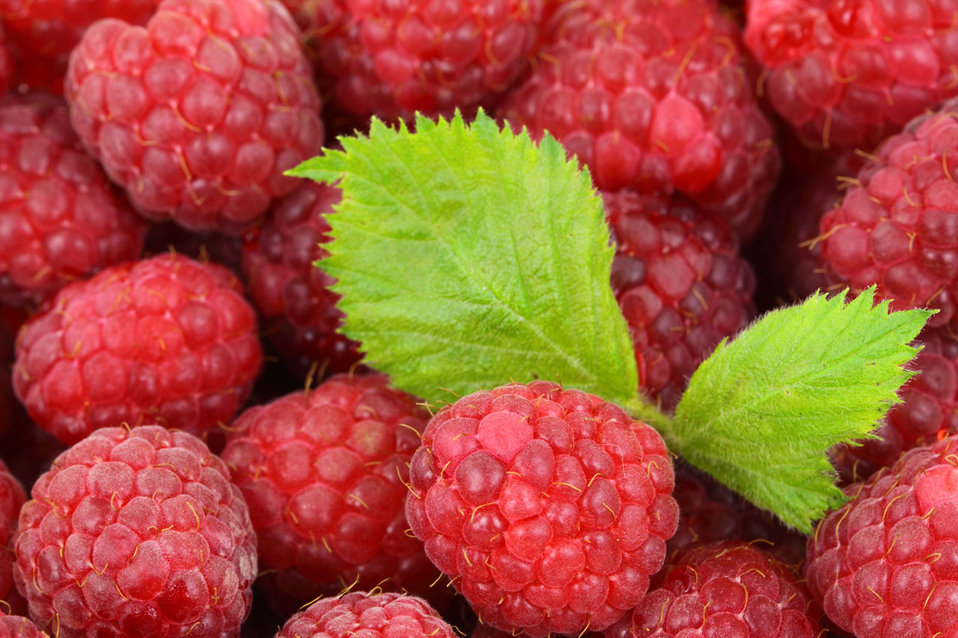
Raspberry background

Fresh raspberry background with a green leaf.